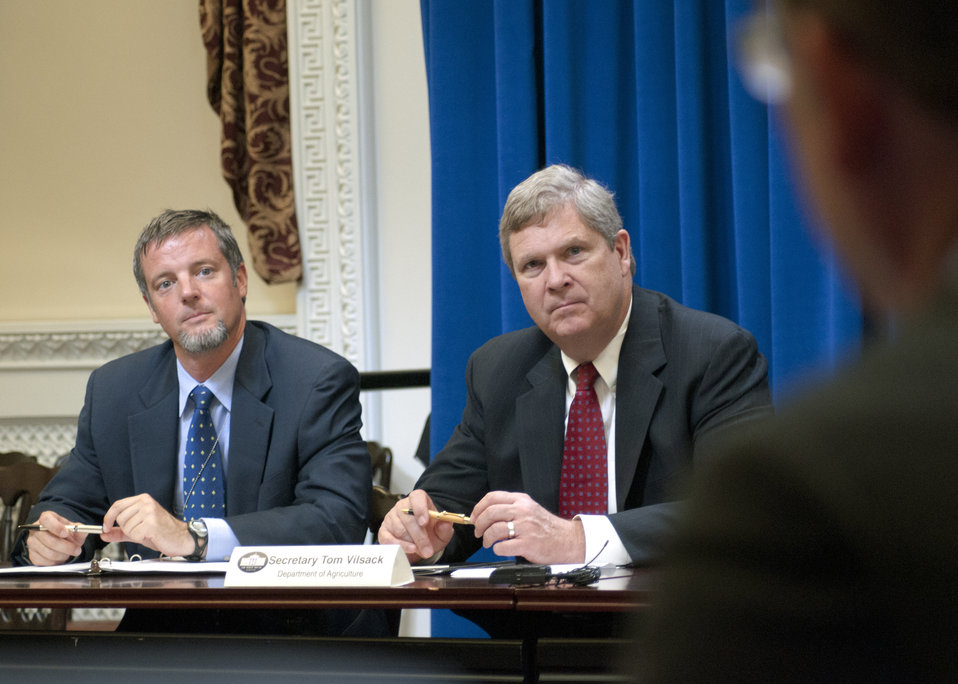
On Wednesday, Jul. 6, 2011, Agriculture Secretary Tom Vilsack attended a meeting at the White House in Washington, DC, with President Barack Obama, the President's Domestic Policy Adviser Melody Barnes and rural communities leaders from across the country for the White House Rural Champions of Change event. The purpose of this meeting is to strengthen rural communities and promote economic growth. Prior to coming here, they were posed with a question about, what should/should not the government be doing to strengthen rural communities and promote economic growth.